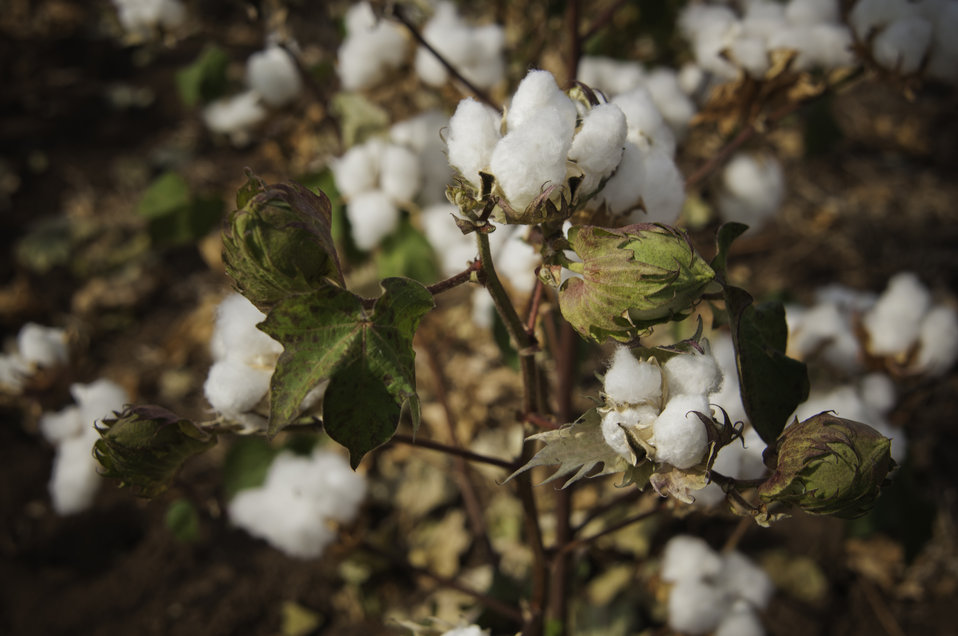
Dry Land cotton grows on a farm in Navasota, TX on Aug. 23, 2013.